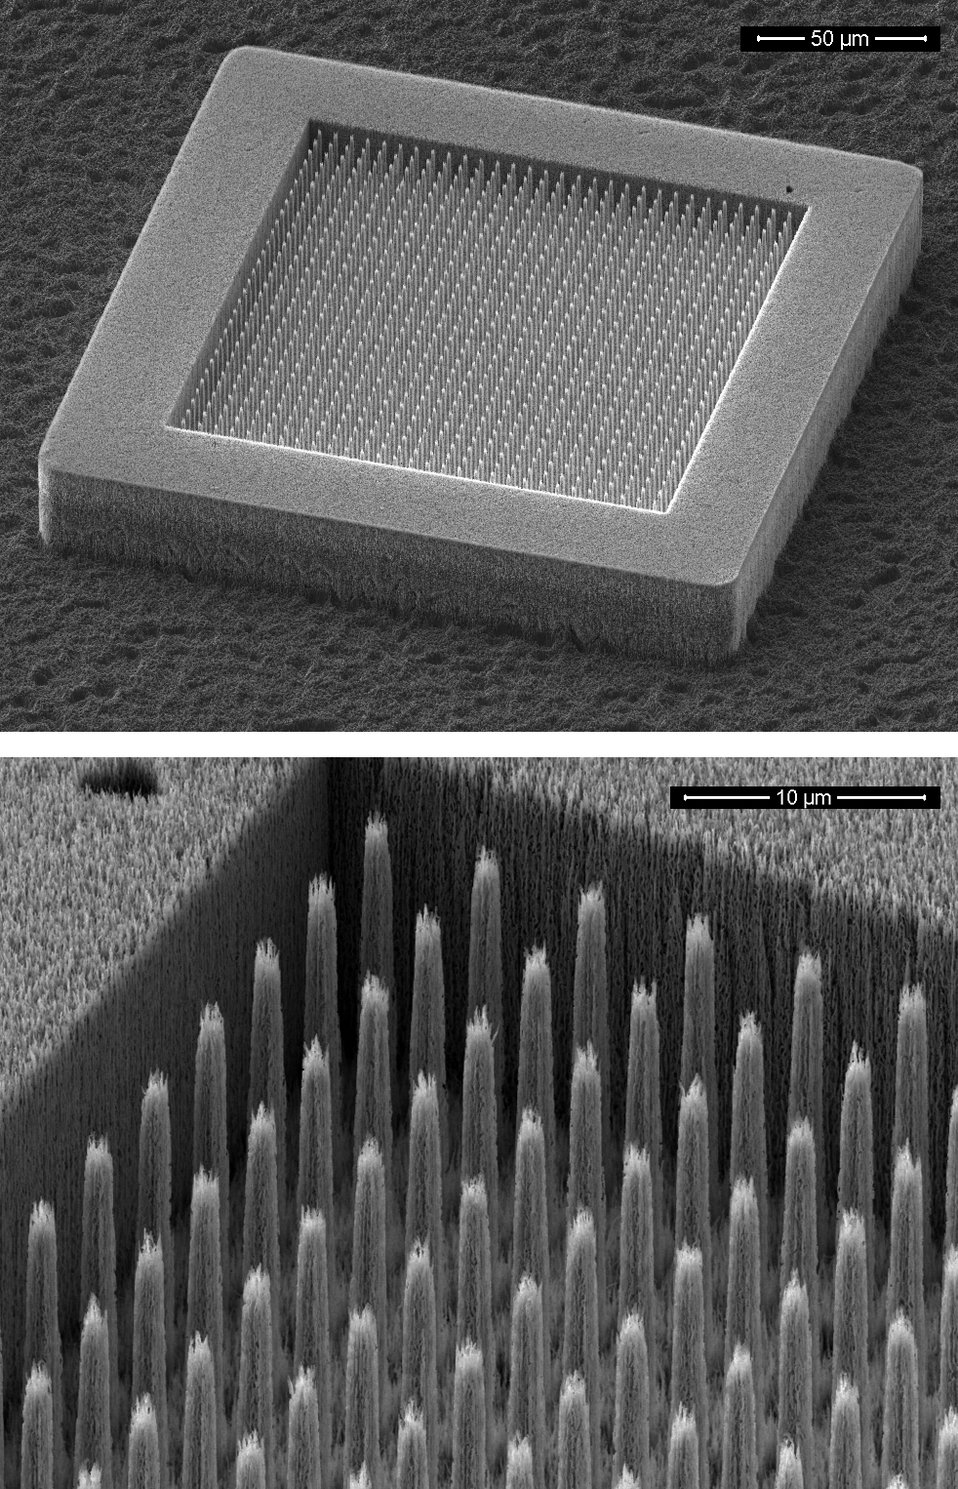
Silicon Carbide Field Emitter

NIST's silicon carbide field emitter produces a flow of electrons comparable to hot sources, but without the need for heat. By dissolving much of the material away to make a porous structure with a large surface area, NIST scientists ensured that as an electron emission point on an individual spike wears out, another is available to take its place, making the array more durable as a whole.